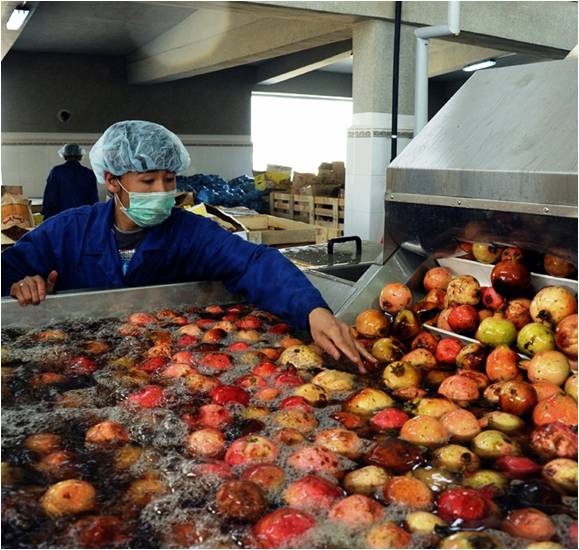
Afghan Pomegranates Reach Europe

Consumers in Europe will soon be savoring the sweet taste of Afghanistan. The United Kingdom’s leading pomegranate juice company recently agreed to a pioneering deal worth nearly $4.5 million with Afghanistan’s first juice concentrate facility. Pomegreat became the first international company to purchase juice concentrate from Afghanistan, committing to import a minimum of 500 tons of pomegranate concentrate and 500 tons of fresh fruit from Omaid Bahar Fruit Processing Facility, a state-of-the-art facility established with the support of USAID.
The Omaid Bahar Fruit Processing Facility, which opened in October 2009, is using Afghanistan’s produce to compete successfully in world markets. The facility processes pomegranates, apples, melons, apricots, and peaches for sale as juice concentrate that meets international quality standards. The facility also sorts, grades, and packages fresh produce for export to Asia, Europe, and North America.
“I am proud to have built this factory, and the commitment from Pomegreat gives me great hope for the future,” said Mustafa Sadiq, owner of Omaid Bahar Fruit Processing Facility.
In addition to introducing Afghan produce to new markets, Omaid Bahar is improving the livelihoods of farmers and offering increased opportunities for Afghan women. The facility receives fruit from 50,000 farmers from at least seven provinces across Afghanistan. The facility provides approximately 200 full-time jobs, with women composing about 35 percent of the staff.
USAID provided technical assistance, equipment, logistical support, and market linkages with farmers and international buyers. USAID also facilitated the initial visit of Pomegreat to the Kabul plant to set the stage for the landmark business deal.
'Being given the chance to source the best pomegranates in the world from their spiritual home is something I couldn’t overlook,” said Adam Pritchard, chief executive officer of Pomegreat. “The Afghan pomegranate is the best in the world.”
In the future, Omaid Bahar hopes to produce juice for local consumers, creating additional jobs and replacing the import of juice from neighboring countries such as Pakistan and Iran. Omaid Bahar also aims to introduce contract farming to guarantee income for farmers and a sufficient supply of fruit for the plant.